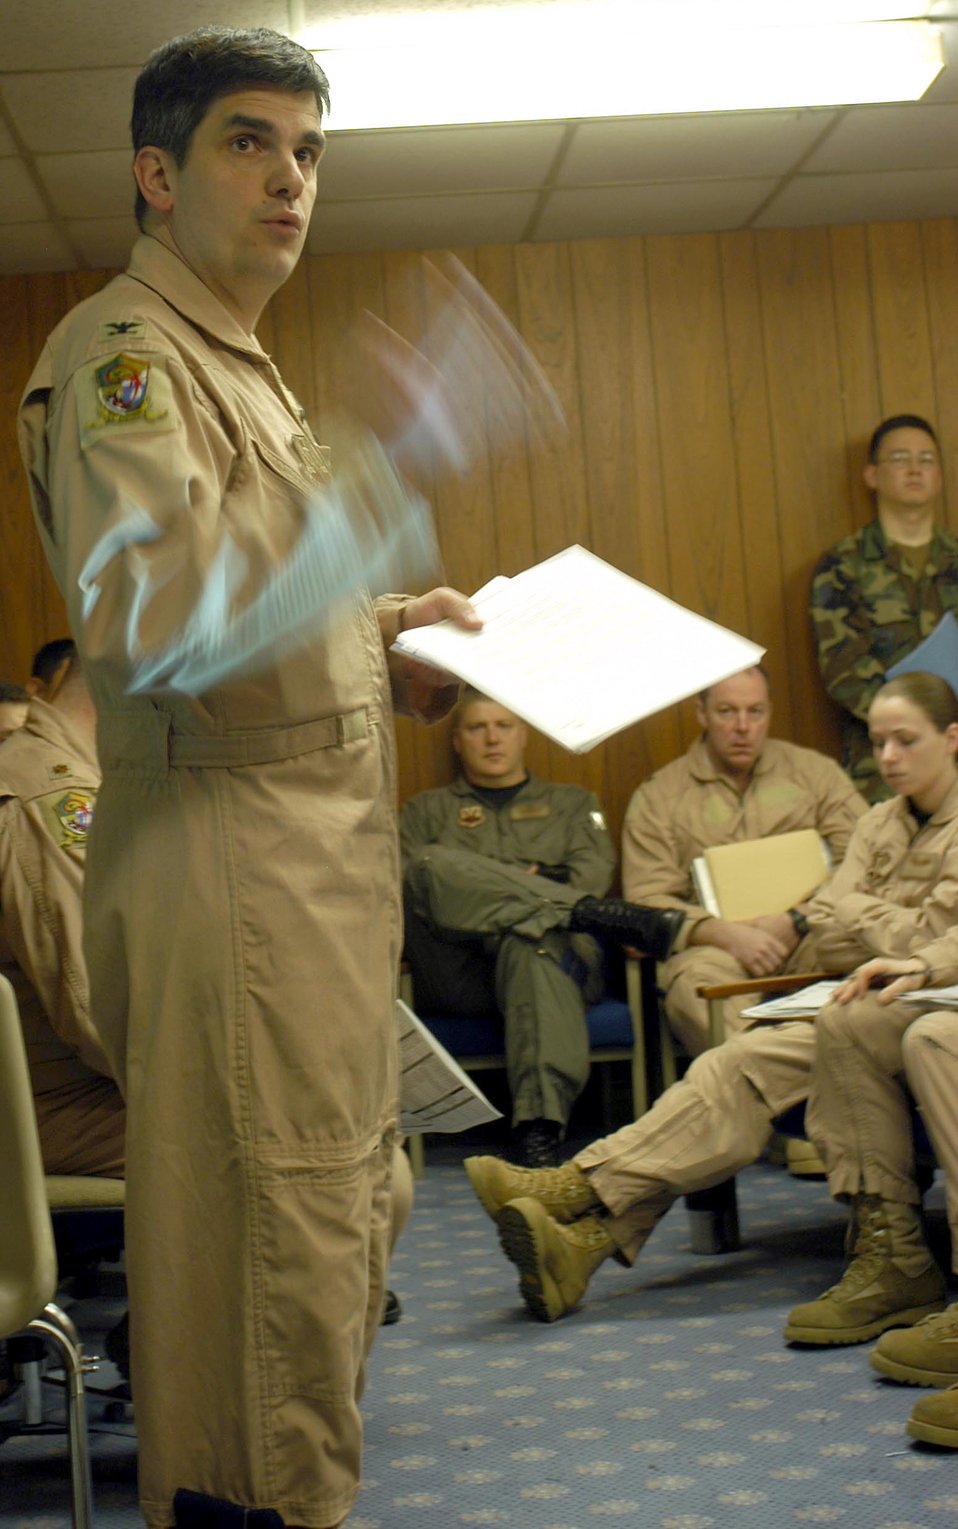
Charchian

OPERATION IRAQI FREEDOM -- Charchian speaks with B-52 crews before the first missions flown from this deployed location March 23.